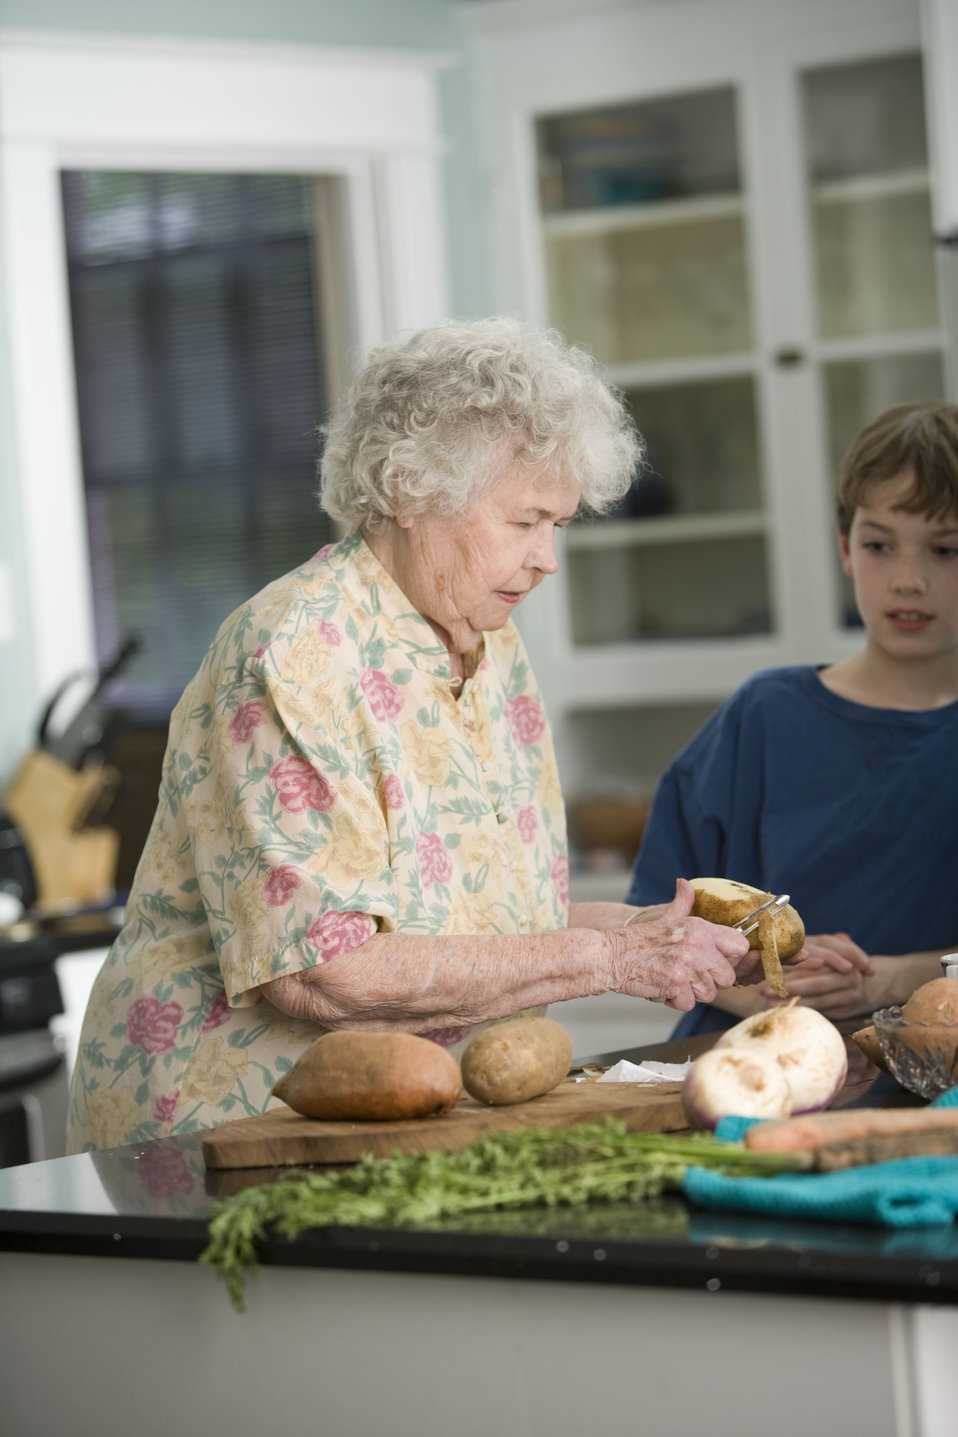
Properly preparing fresh, uncooked produce is a must, and with this in mind, the elderly woman pictured here was teaching her grandson how to do just that, while peeling a number of sweet potatoes.